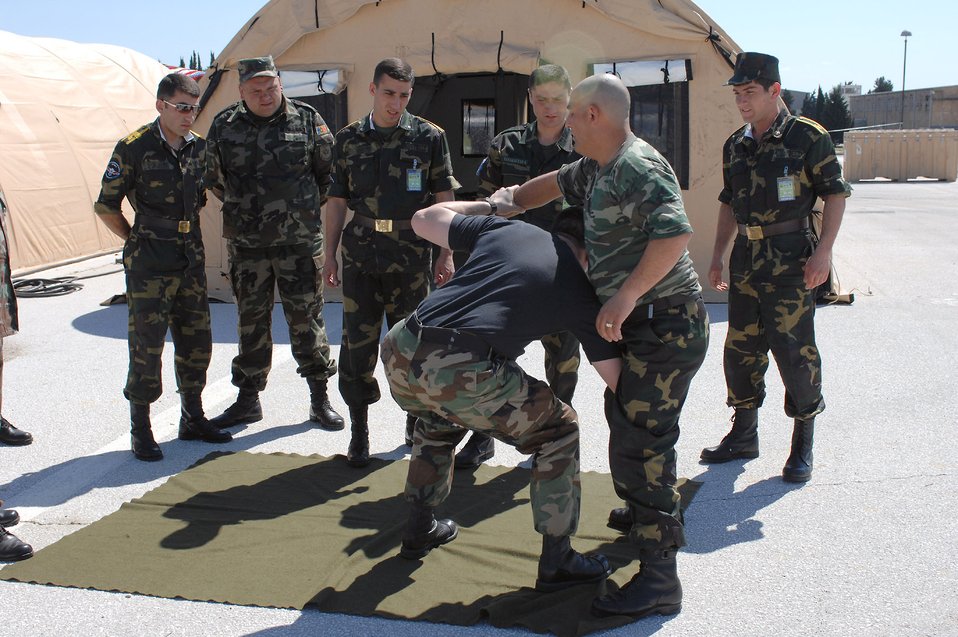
Medical training exercise supports partnership for peace

Staff Sgt. Timothy Nagowski demonstrates the fireman's carry May 3 for cadets from the Military Medicine Faculty of the Armenian Medical University during the 2008 Medical Training Exercise in Central and Eastern Europe. MEDCEUR is a Joint Chiefs of Staff regional/multilateral exercise sponsored by U.S. European Command and will run now through May 14. Croatia is hosting the 2008 exercise which has drawn about 400 multi-nationals in support of the Partnership for Peace initiative. The exercise focuses on mass-casualty training scenarios and humanitarian aid in response to crises situations. Sergeant Nagowski is with the 458th Expeditionary Medical Squadron.